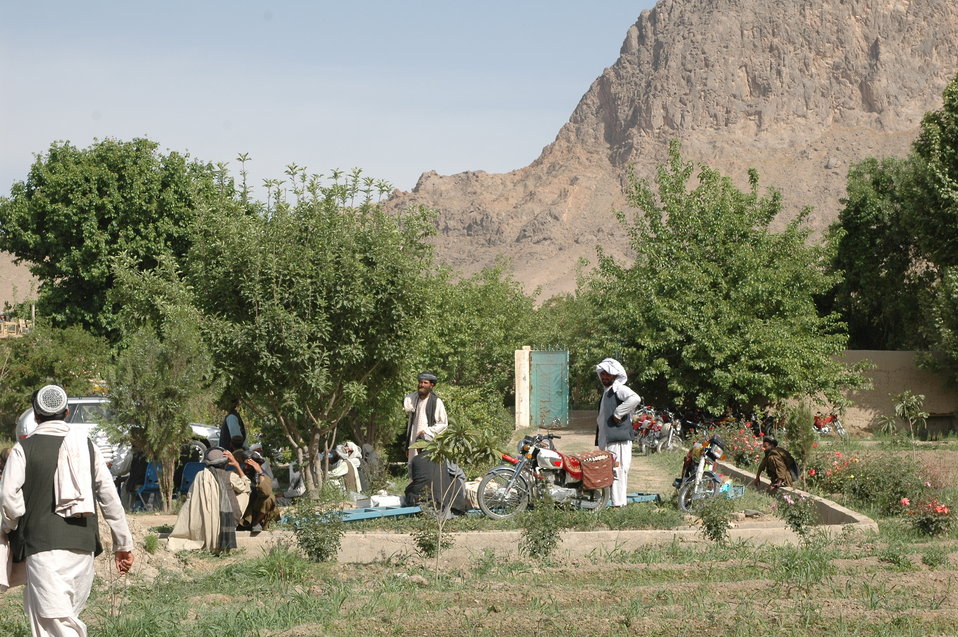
Dr Shah Visits Argandab April 10, 2010